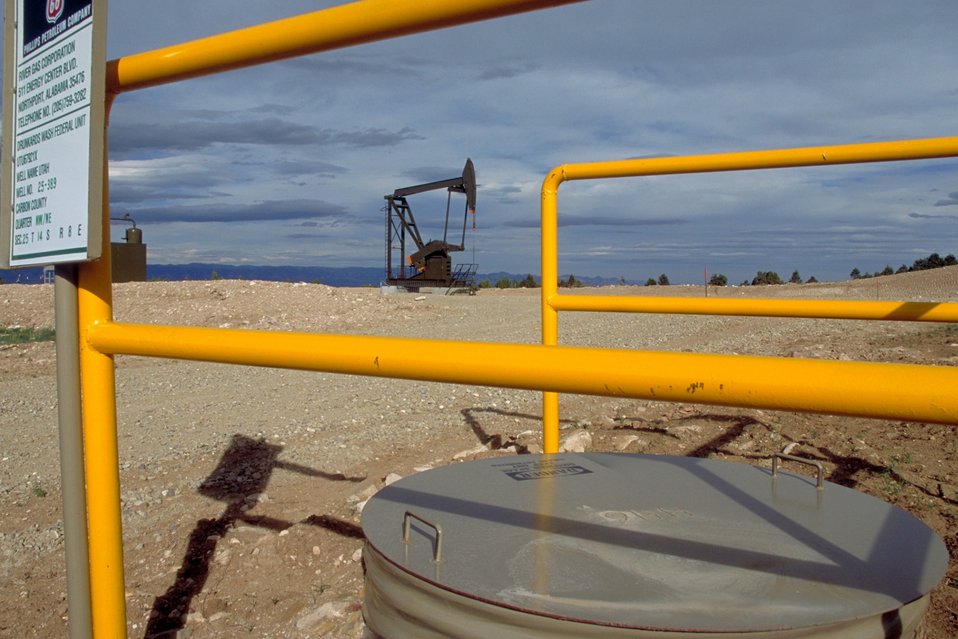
Pump unit producing coal bed methane near Price, Utah.